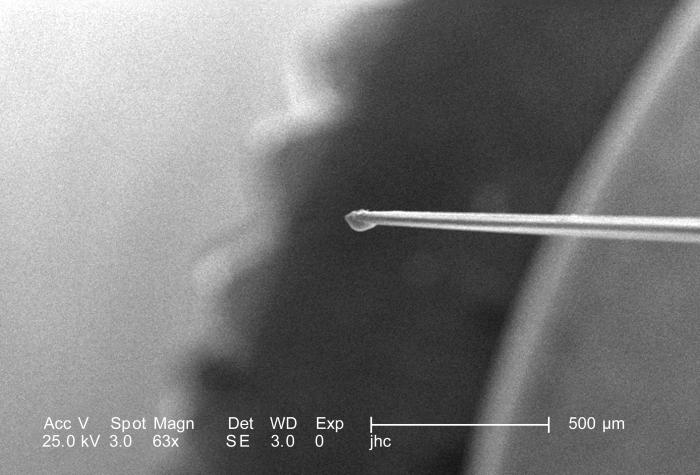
Under a relatively low magnification of 63X, this scanning electron micrograph (SEM) focused on the distal tip of a female 'velvet ant's', Dasymutilla sp., stinger. Note that the very tip of the stinger is encased in a bulbous sheath.